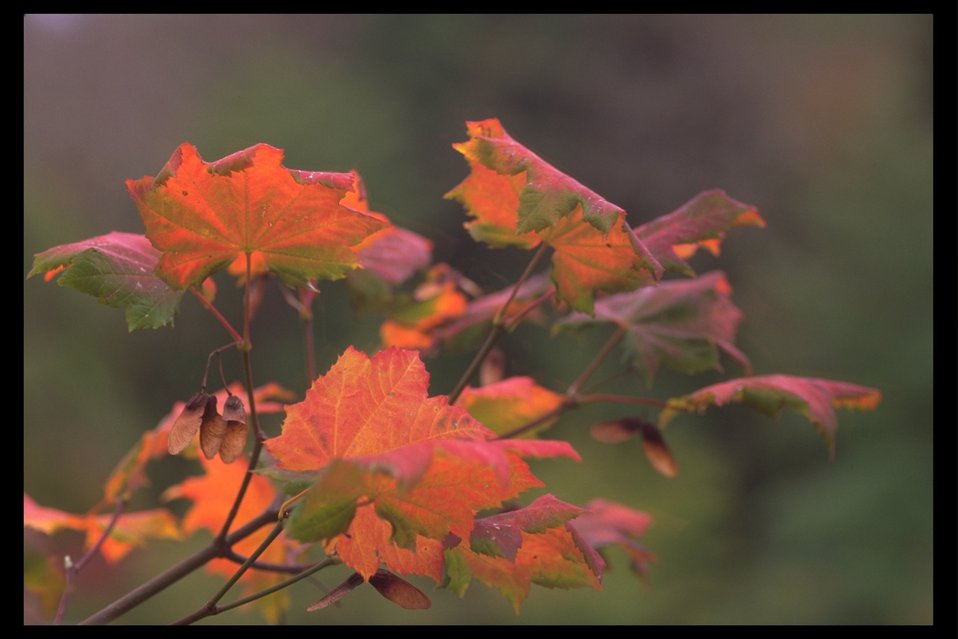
Fall leaves in Lithia Park, Ashland.